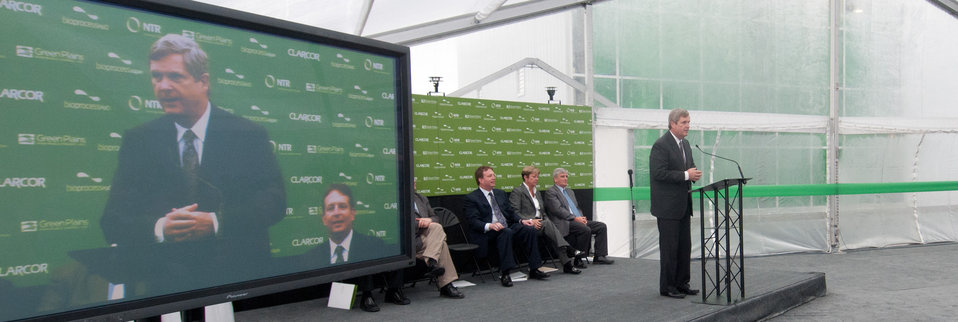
Agriculture Secretary Tom Vilsack speaks at the Grand Opening ceremony of Phase II of the BioProcess Algae facility at Green Plains Renewable Energy (GPRE) Inc. on Friday, Apr. 15, 2011 in Shenandoah, IA. Phase II is a key component in the commercial scale photo bioreactors/harvesters. The operation is co-located within an GPRE’s ethanol factory where BioProcess Algae technology is used to treat waste products; carbon dioxide, recycled heat and water to mass-produce algae. Algae from this facility are used for animal feeds, pharmaceutical and beauty products.